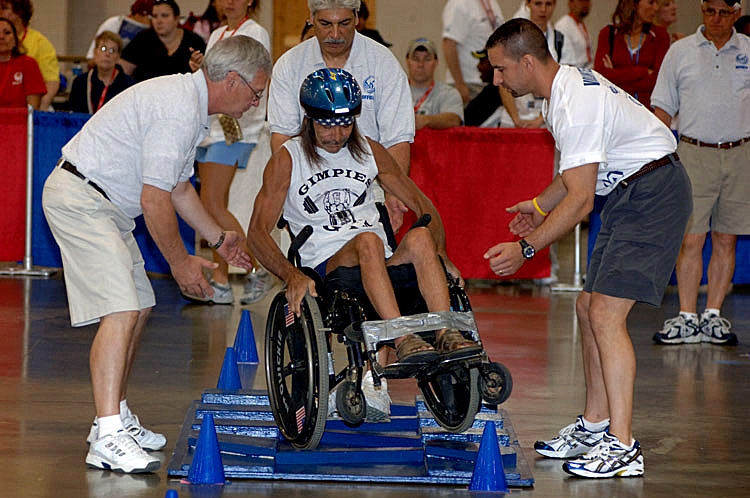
Wheeling through the slalom

Volunteers assist as Air Force veteran Daniel Young masters the slalom course at the 27th National Veterans Wheelchair Games in Milwaukee, Wis., held June 19 to 23. More than 500 disabled veterans were at the games, sponsored by the Department of Veterans Affairs and the Paralyzed Veterans of America.